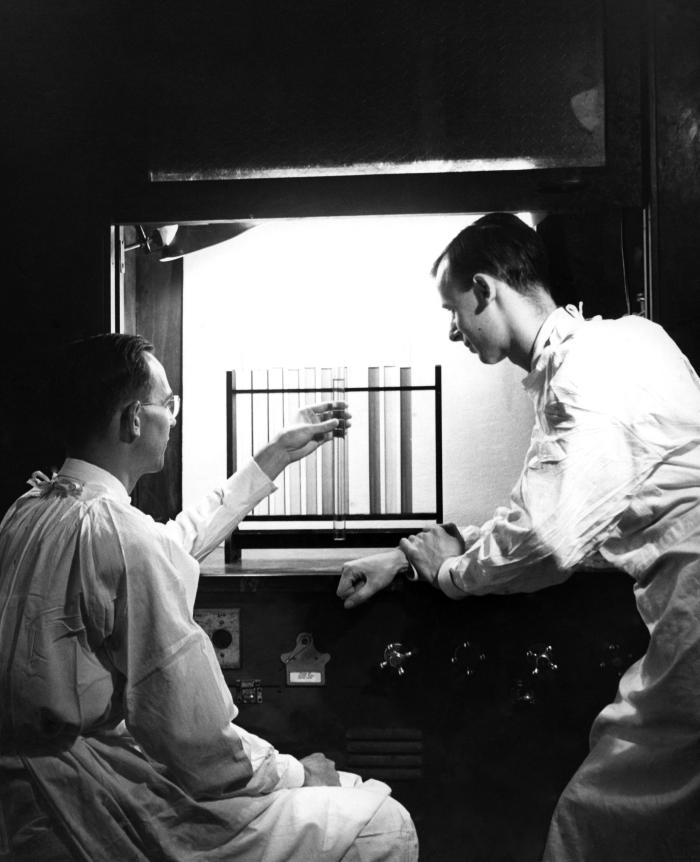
This November, 1943 photograph was provided by the Center for Disease Control's (CDC), National Institute for Occupational Safety and Health (NIOSH). The image depicted two industrial chemists in the process of analyzing test tube filled with solutions of TNT (trinitrotoluene), and Tetryl, which is an organic explosive compound that is potentially an irritant known to cause industrial dermatitis. The tests being performed induced color changes in the solutions, which were then compared, and the results recorded. Note that neither scientist was wearing a protective filtered breathing mask, goggles, or gloves while carrying out these experiments.